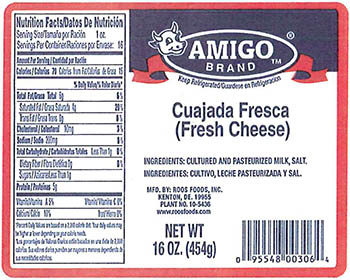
RECALLED – Variety of cheeses

February 23, 2014 – Product Recall – Roos Foods Voluntarily Recalls Variety of Cheeses (listed below) Due to Possible Health Risk.